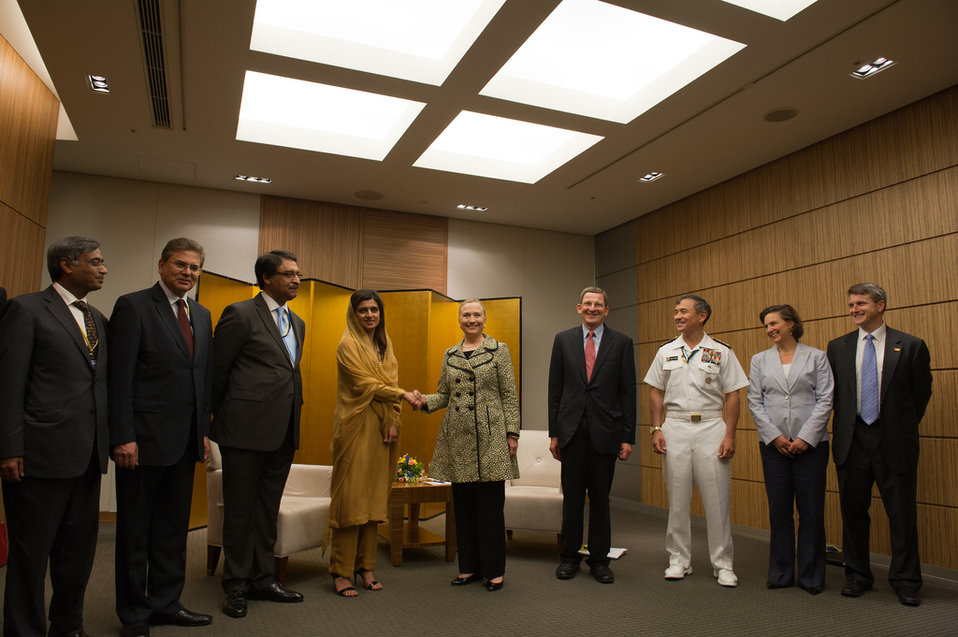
Secretary Clinton Meets With Pakistan Foreign Minister Khar

U.S. Secretary of State Hillary Rodham Clinton meets with Pakistan Foreign Minister Hina Rabbani Khar on the sidelines of the Tokyo Conference on Afghanistan in Tokyo, Japan, on July 8, 2012.